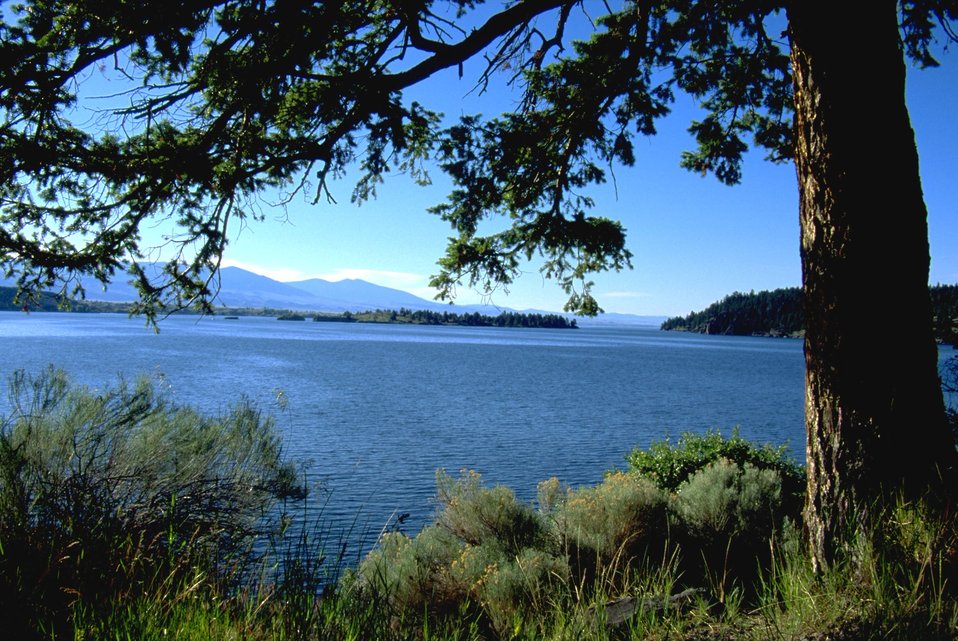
Canyon Ferry Lake framed by trees